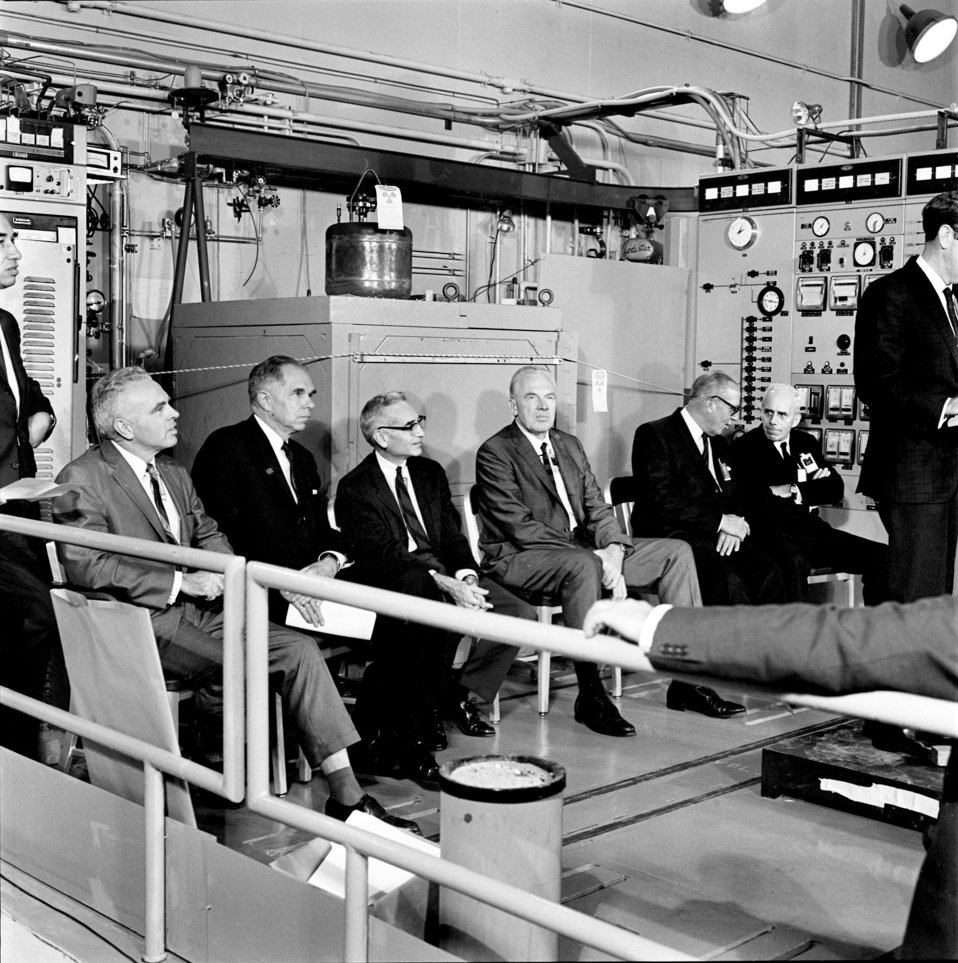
Startup of MSRE with U-233 1968 Oak Ridge

68-510 DOE photo Frank Hoffman 10-10-1968 Molten Salt Reactor began operating with uranium-233 fuel Oak Ridge Tennessee